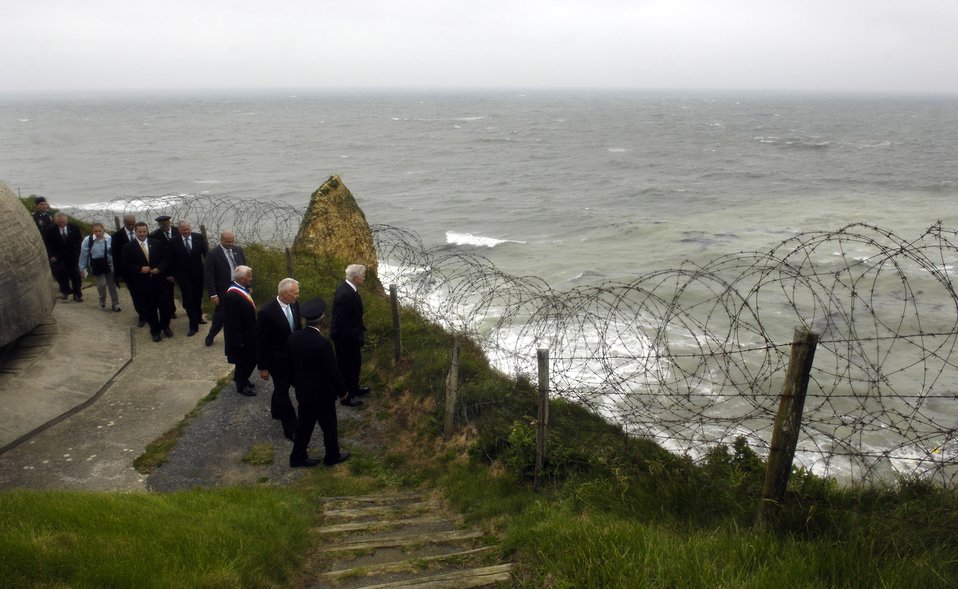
Defense secretary, servicemembers reflect on D-Day heroism

Secretary of Defense Robert M. Gates looks out over Omaha beach at Point-du-Hoc on the 63rd Anniversary of D-Day June 6 in Normandy, France. During World War II, rangers assulted the beaches at Point-du-Hoc and scaled the 100-meter-high cliffs to defeat the enemy for the cause of freedom.